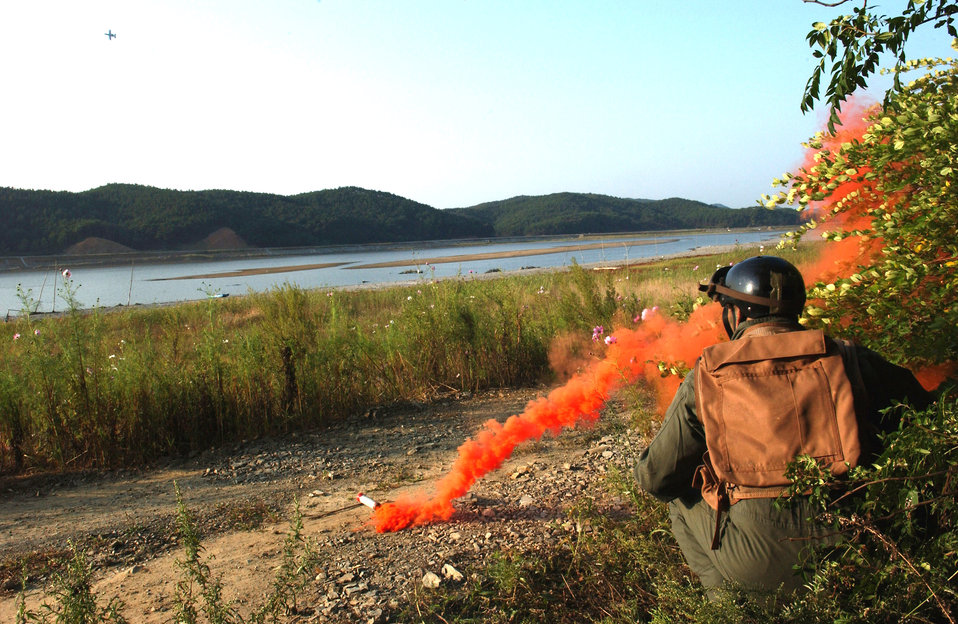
Life-saving training at Osan AB

Maj. Paul Neidhardt gets the attention of four A-10 Thunderbolt II pilots by using a smoke grenade during combat search and rescue training Sept. 21 near Osan Air Base, South Korea. Annual training is conducted by survival, evasion, resistance and escape instructors to reacquaint aircrew members with combat search and rescue procedures and techniques. Major Neidhardt is with the 25th Fighter Squadron at Osan AB.